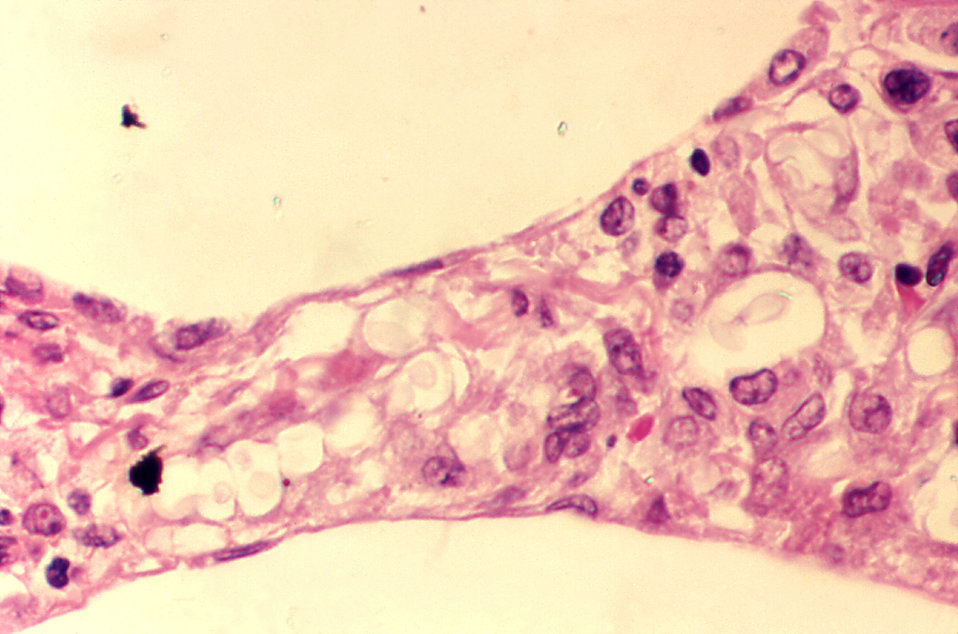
Cryptococcosis of lung in patient with AIDS.